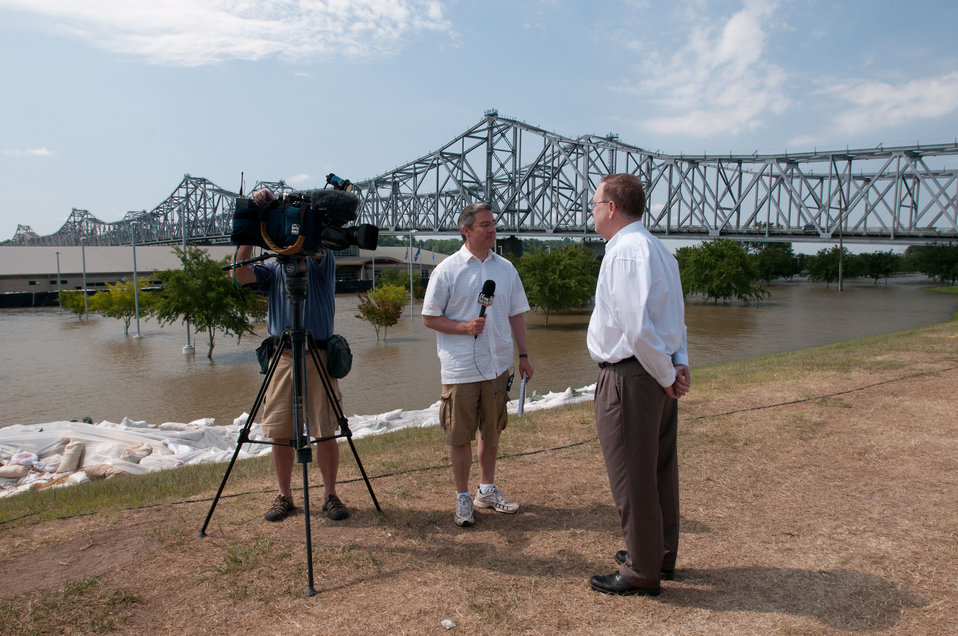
U.S. Department of Agriculture Undersecretary for Rural Development Dallas Tonsager is interviewed near the levee on the Mississippi River at Vidalia, LA, on Thursday, May 19, 2011. In the background is the Natchez–Vidalia Bridge which connects Natchez, Mississippi and Vidalia, Louisiana.